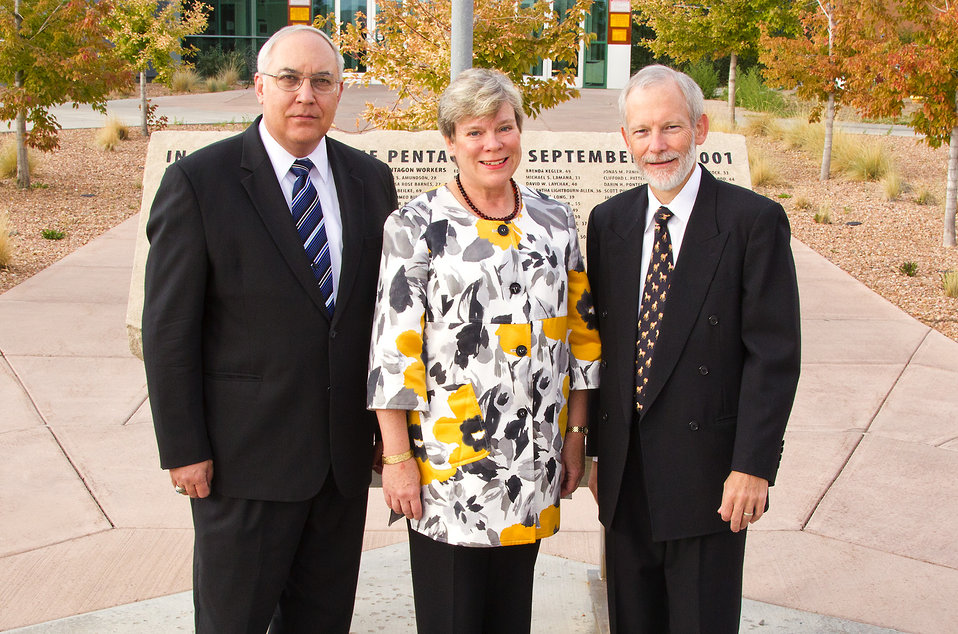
Assistant Secretary Gottemoeller Meets With Kevin Smith and William S. Rees at Los Alamos National Laboratory

Assistant Secretary of State for Arms Control, Verification and Compliance Rose Gottemoeller meets with Los Alamos Site Office Manager Kevin Smith, left, and William S. Rees, Jr., LANL Principal Associate Director for Global Security, right, at Los Alamos National Laboratory in New Mexico on August 19, 2011.